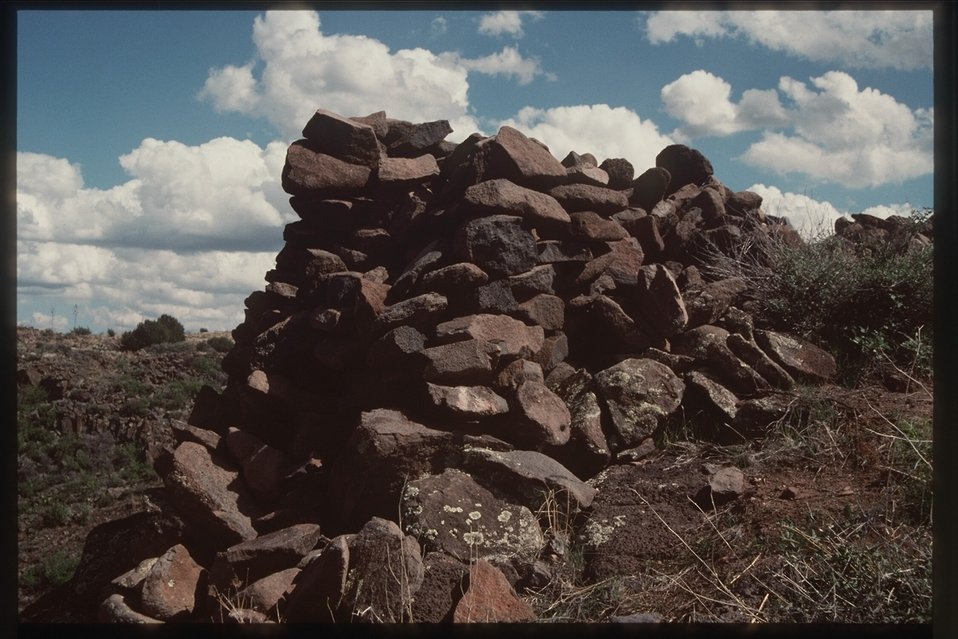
Seven major settlements have been discovered by archaeologists within the Agua Fria National Monument. Here, a portion of a pueblo wall still stands.